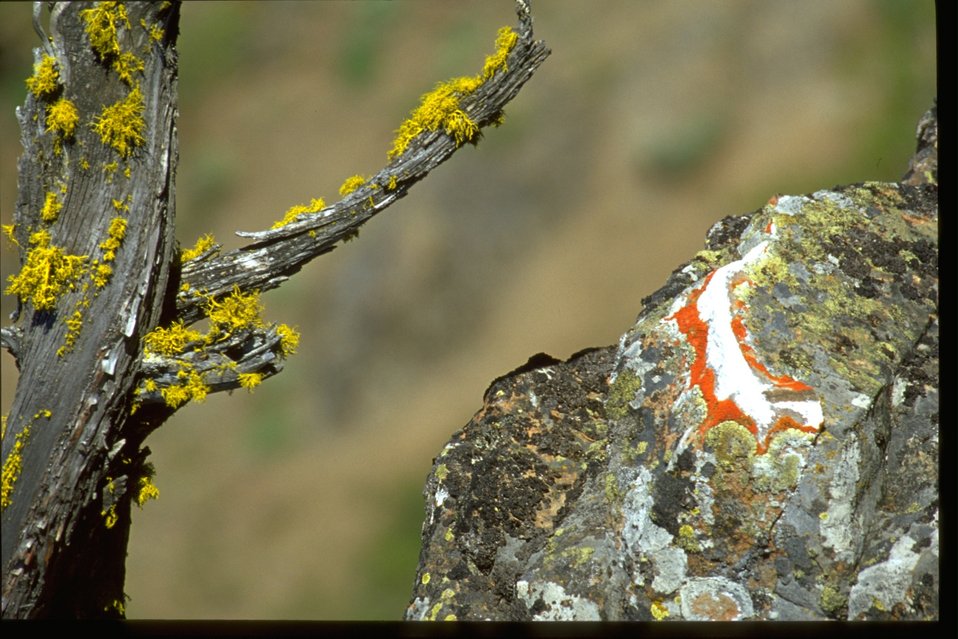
Packrat deposit and lichen on rock.